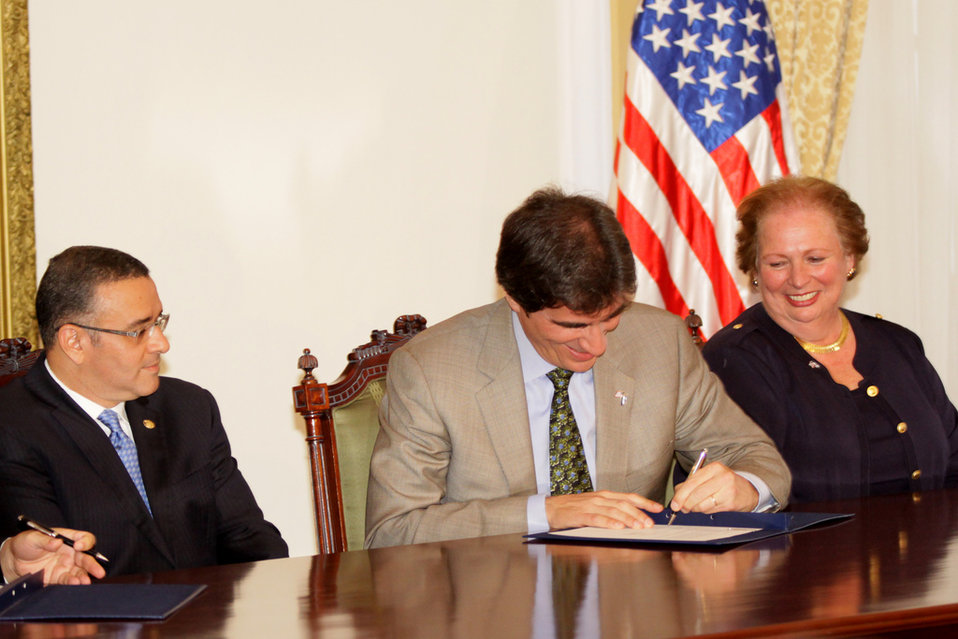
Assistant Secretary Fernandez Signs the Partnership for Growth Initiative

Assistant Secretary of State for Economic, Energy and Business Affairs Jose Fernandez signs the Partnership for Growth Initiative at the Presidential Palace in San Salvador, El Salvador, on November 3, 2011. Salvadoran President Mauricio Funes and U.S. Ambassador to El Salvador Mari Carmen Aponte are also pictured.